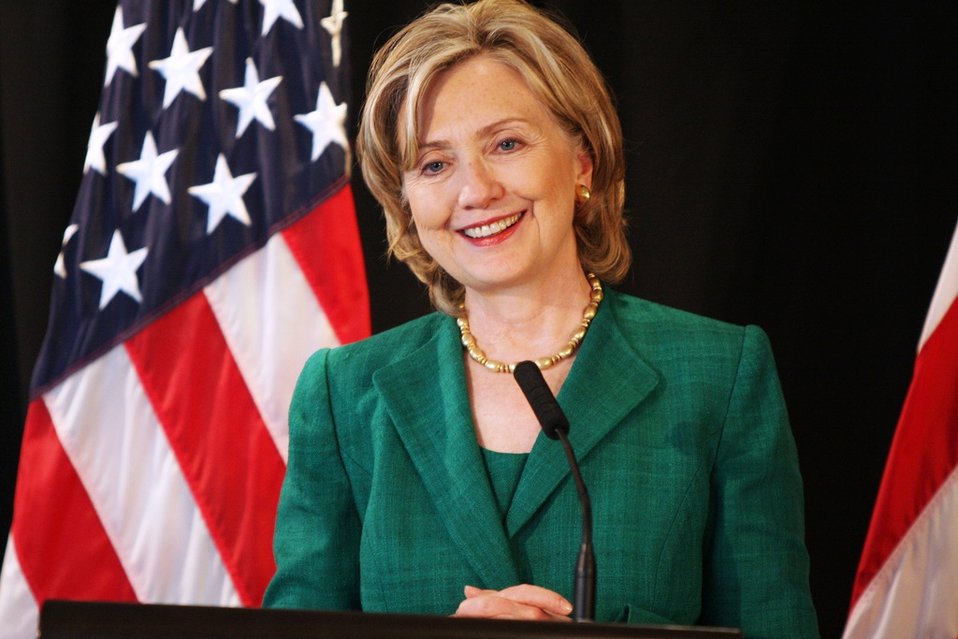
Secretary Clinton Delivers Remarks on Cheonan Incident

U.S. Secretary of State Hillary Rodham Clinton delivers remarks addressing the Cheonan incident to the traveling press corps in Beijing, China, on May 23, 2010.